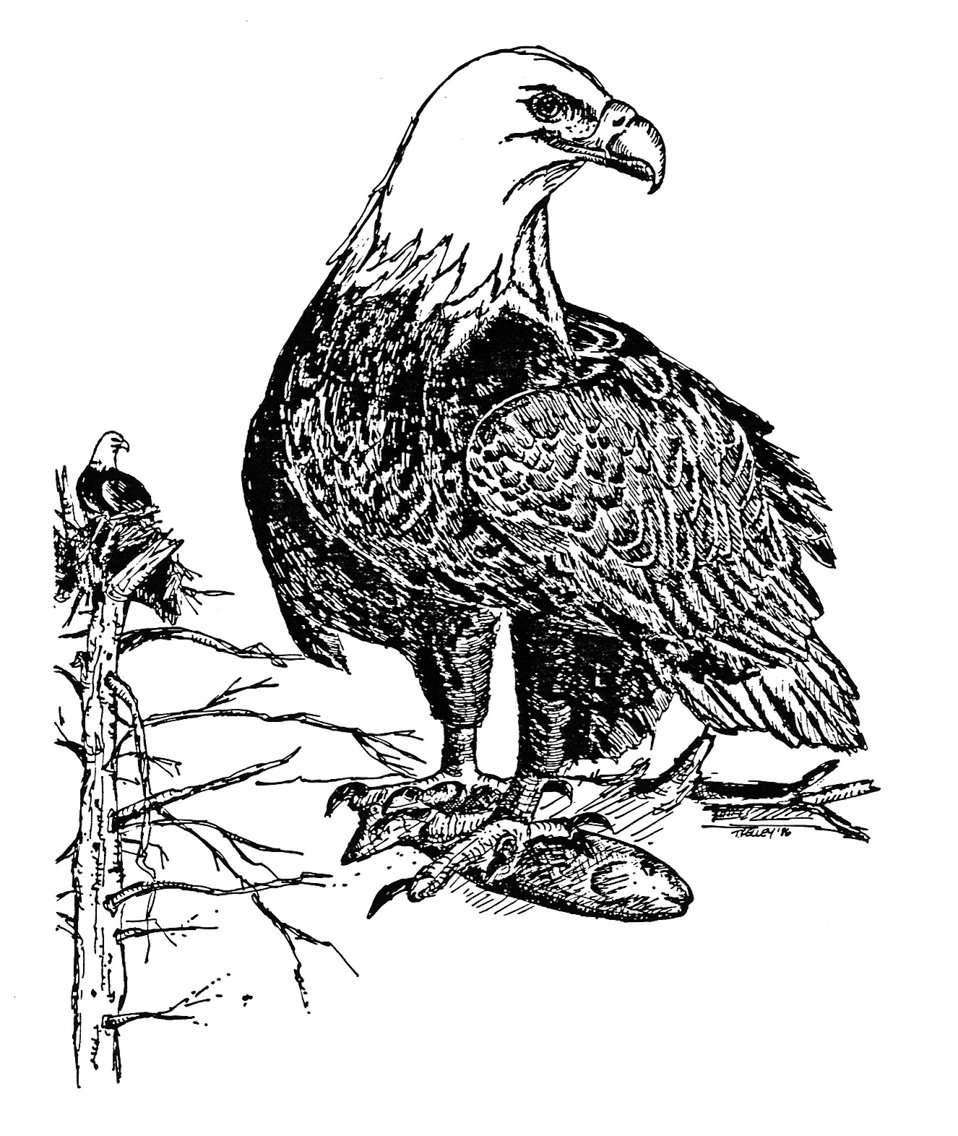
Bald Eagle.